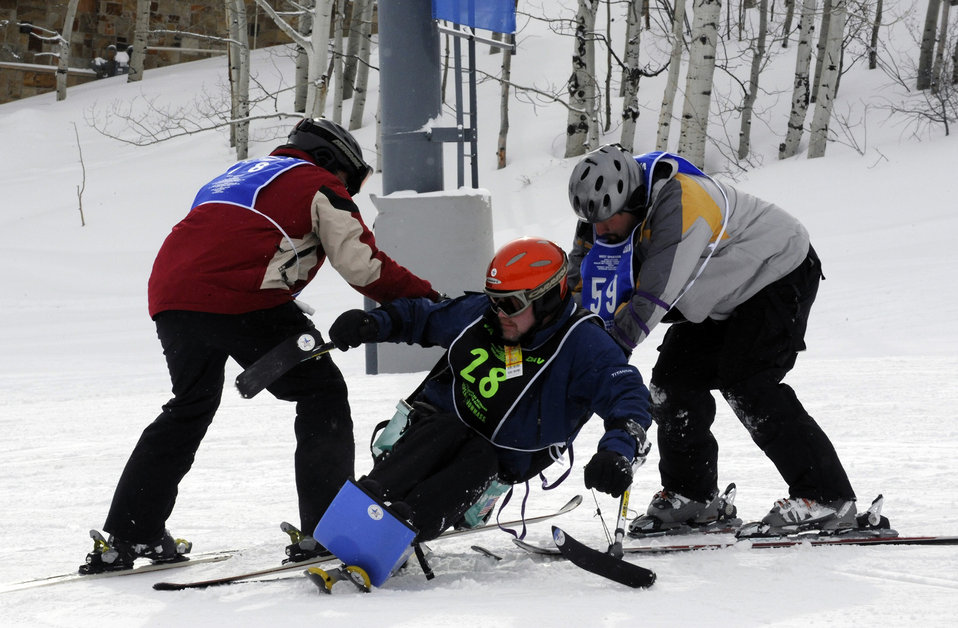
Tackling the slopes

Glenn Hallberg (left) and Mark Finken teach Air Force veteran Michael Murphy how to ski March 30 during the National Disabled American Veterans Winter Sports Clinic. Mr. Hallberg and Mr. Finken are ski instructors for the sports clinic, and this is Mr. Murphy's first year to attend the clinic.